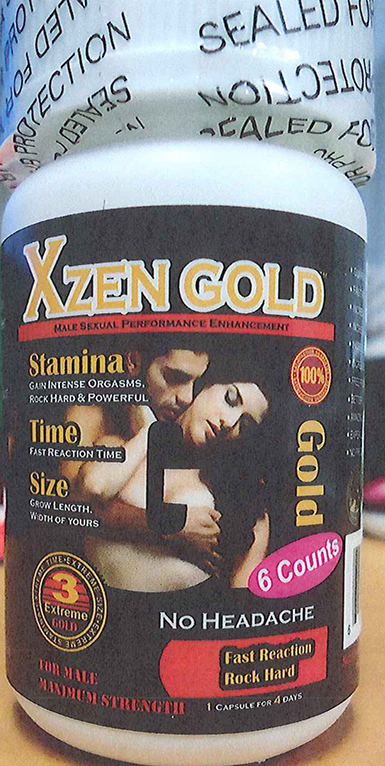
RECALLED – Dietary Supplement

April 1, 2014 – Product Recall – Nova Products, Inc. Issues Voluntary Nationwide Recall of Dietary Supplements with Undeclared Active Pharmaceutical Ingredients.